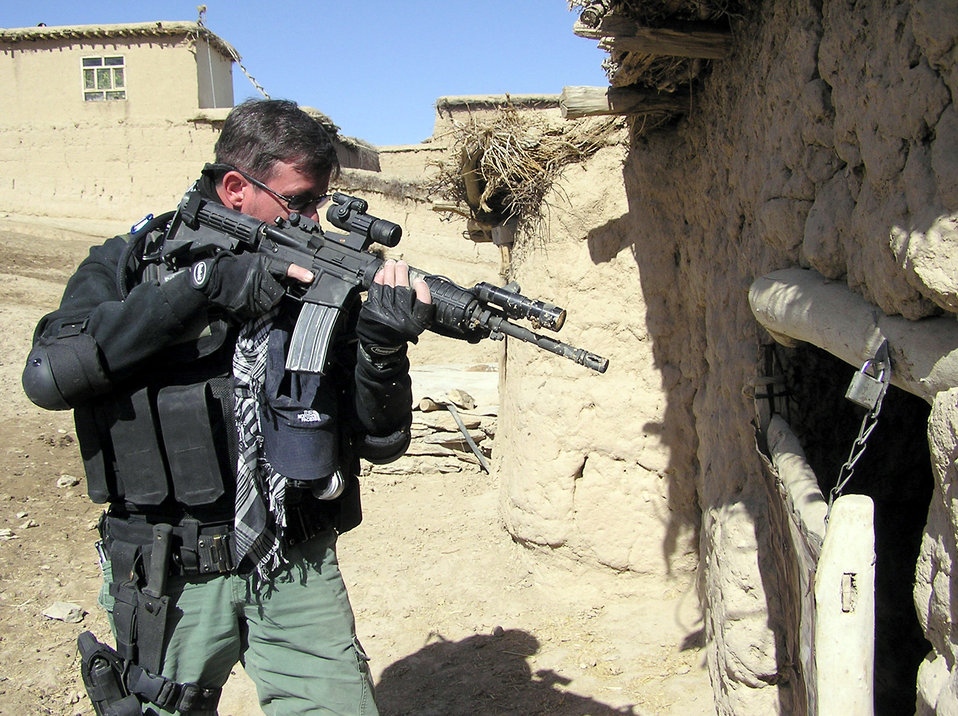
OSI faces evil

QALAKHEL, Afghanistan -- Special Agent Tony searches for a suspected Taliban weapons cache here. Agent Tony is a member of the Air Force Office of Special Investigations' anti-terrorism specialty team deployed from Lackland Air Force Base, Texas.